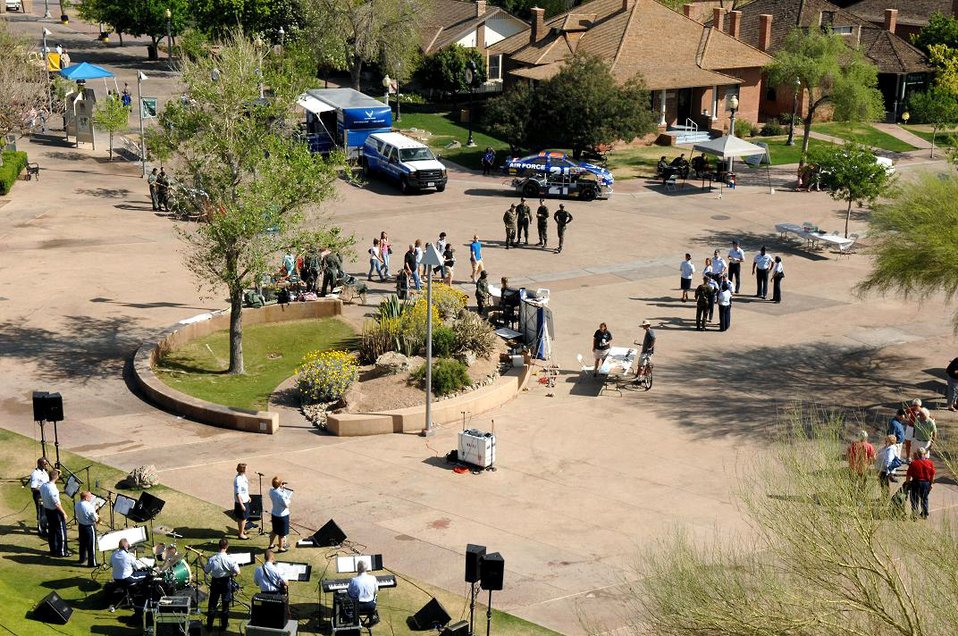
Air Force Week displays highlight airpower

Air Force displays outside the Arizona Science Center in downtown Phoenix allow Air Force Week visitors to tour and ask questions about things their Air Force is doing around the globe. Air Force Week runs from March 19 to 25.